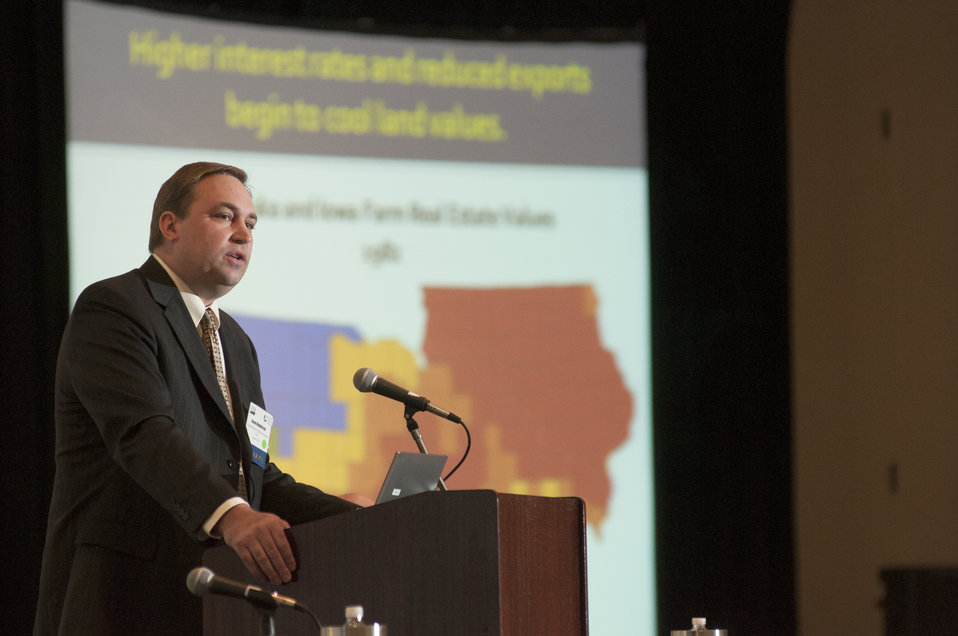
Federal Reserve Bank of Kansas City Omaha Branch Vice-President and Branch Executive Jason R. Henderson spoke to the Grains and Oilseeds Luncheon, during the U.S. Department of Agriculture (USDA) 2013 Agricultural Outlook Forum held at the Crystal Gateway Marriott Hotel in Arlington, VA on Friday, Feb. 22, 2013.